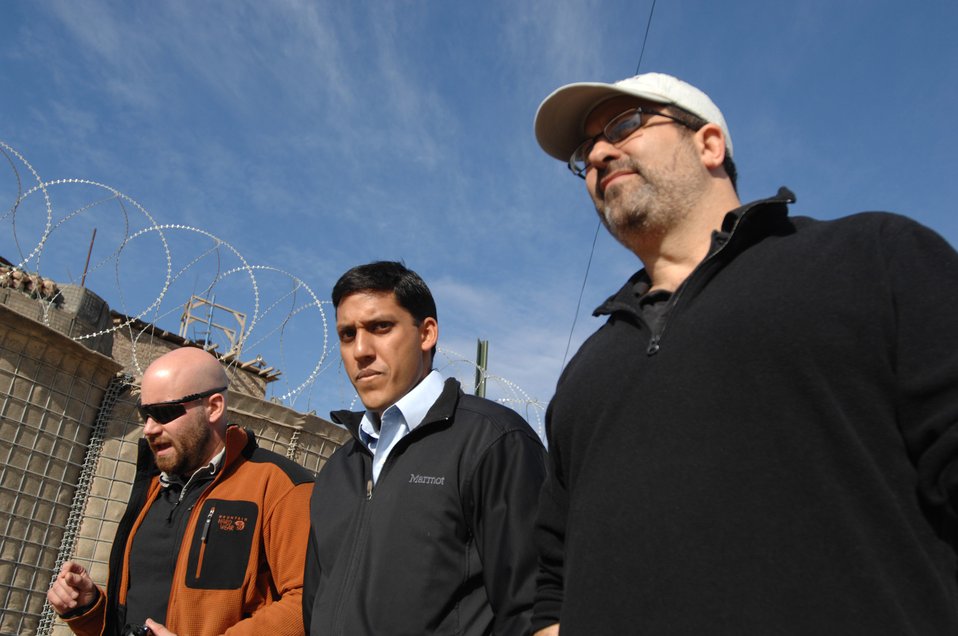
110209sv Shah078

Dr. Rajiv Shah, Administrator of the United States Agency for International Development (USAID), meets with USAID workers at FOB Connolly in Nangarhar province on Wednesday, February 9, 2011. (S.K. Vemmer/Department of State)